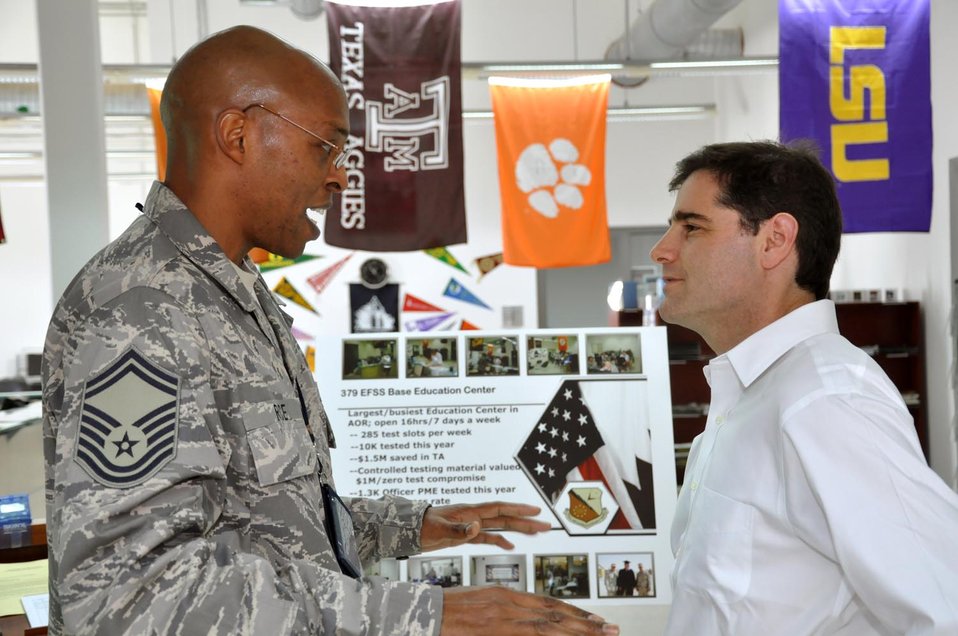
Chairman Genachowski visits with U.S. soldiers